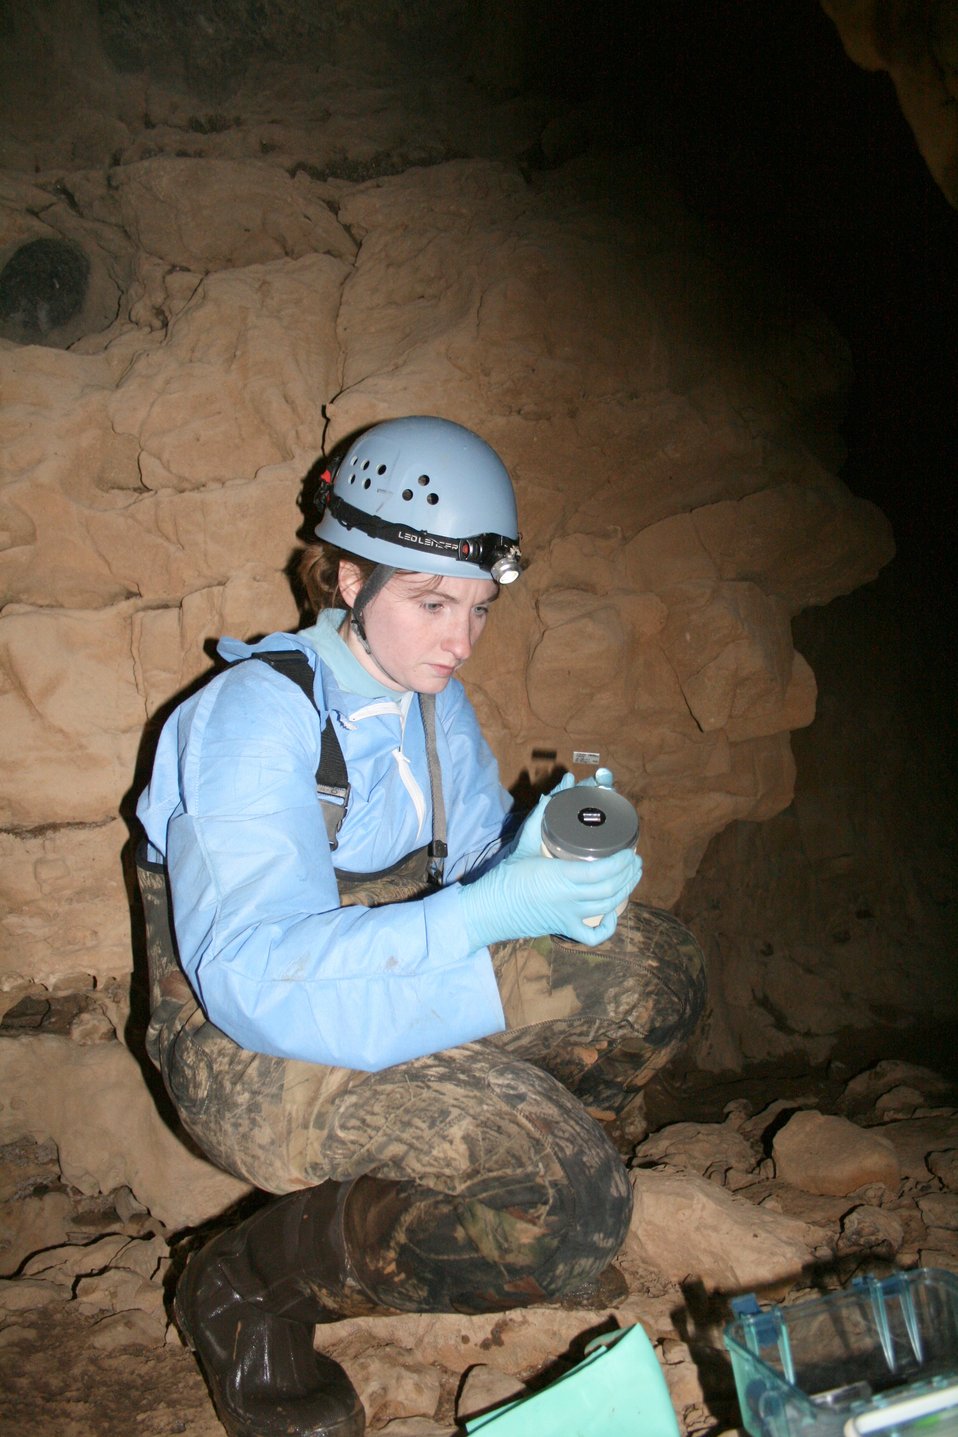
MDC biologist Shelly Colatskie sets up an air sampler in a Missouri cave